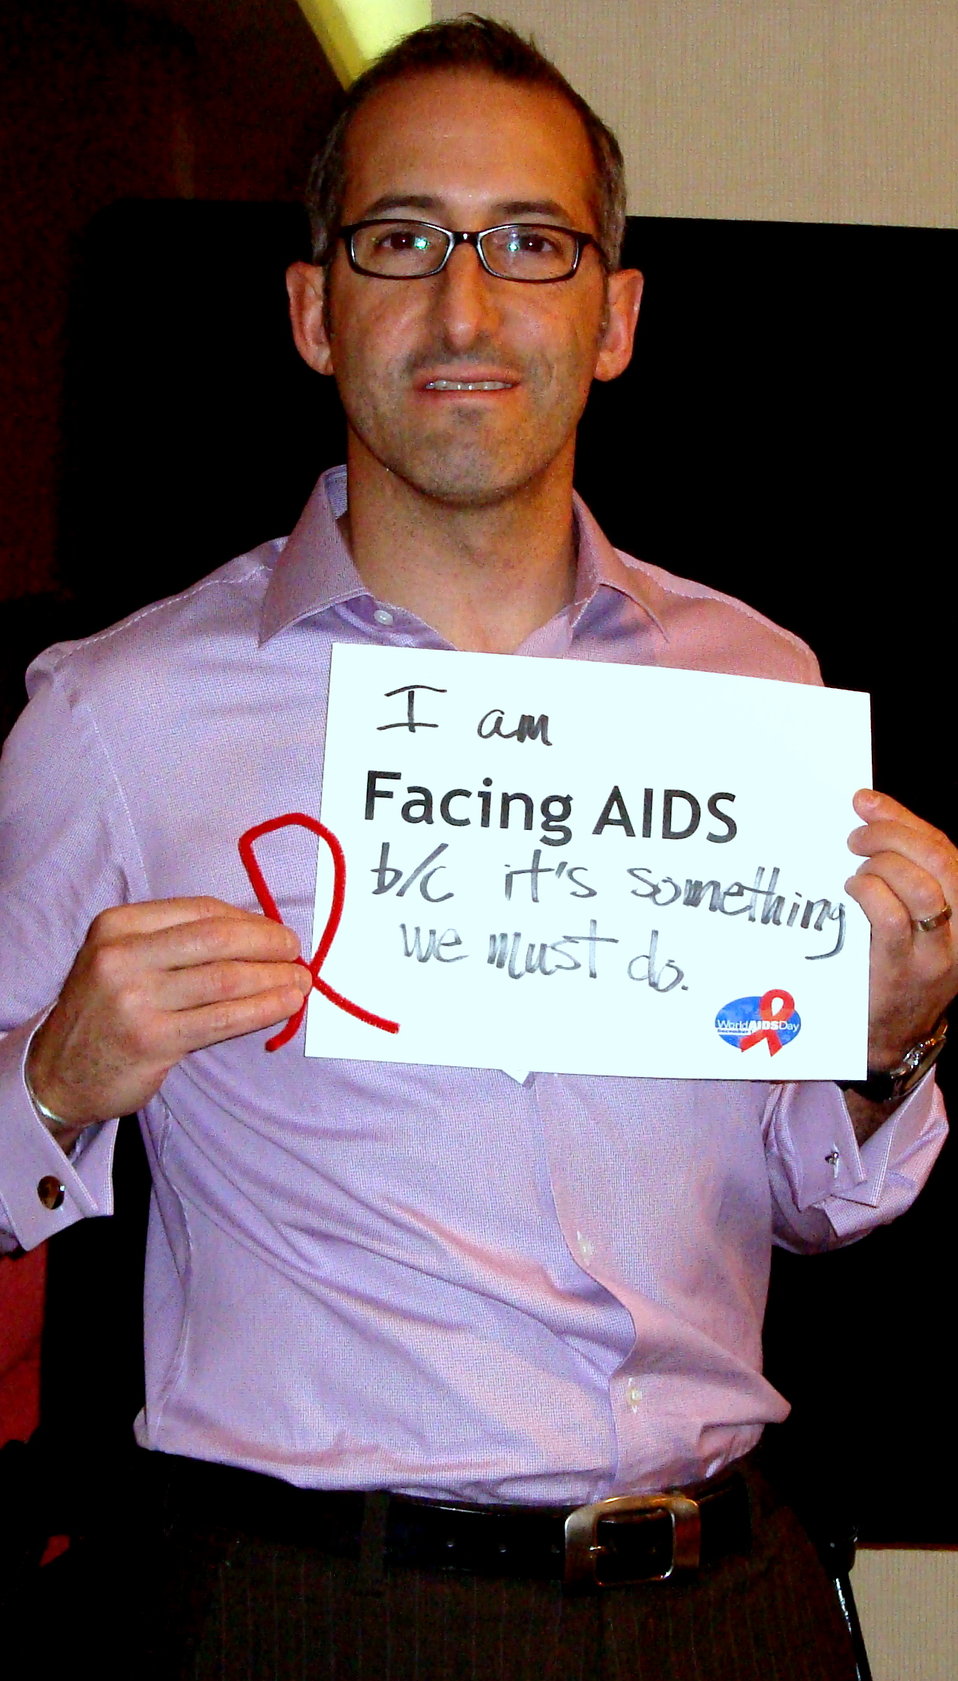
FacingAIDSCampaign 001